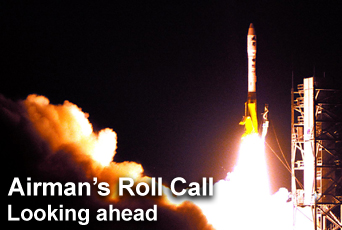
Airman's Roll Call

This week's Airman's Roll Call highlights Air Force leaders' views about the past and future of the service.